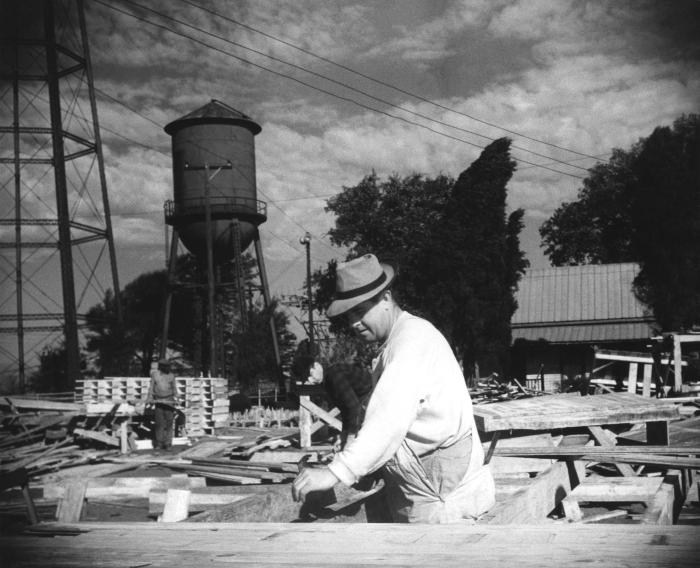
Provided by the Center for Disease Control's (CDC), National Institute for Occupational Safety and Health (NIOSH), this historic 1943 image depicted a male construction worker on a construction site in the process of handling a wooden plank. Note that the man was wearing no protective gear such as goggles, filtered breathing mask, or gloves. It cannot be determined from this photograph exactly what the man was doing, but he may have been planing a wooden plank, however, whatever the activity may have been, modern day regulations would have called, at minimum, for his use of protective eyewear.